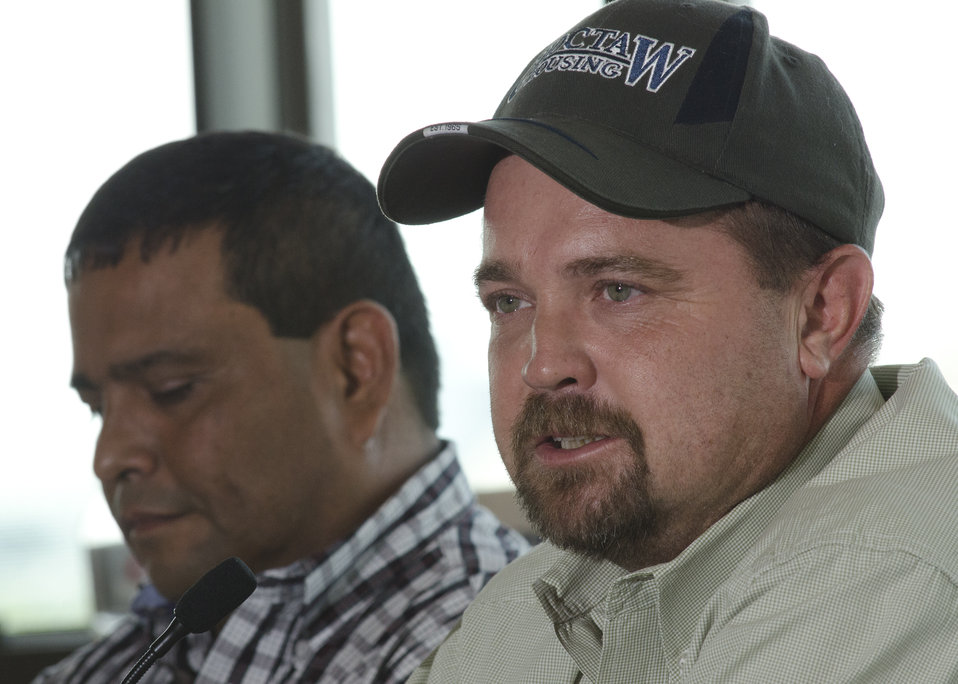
Farmer/Rancher of the Choctaw Nation in Soper, OK., Henry “Porter” Holder, speaking, was elected Vice Chairman of the U.S. Department of Agriculture’s (USDA) Council for Native American Farming and Ranching (CNAFR) held at the National Museum of the American Indian in Washington, D.C., on Wednesday, Aug. 15, 2012. CNAFR was created to advise the Secretary on ways to eliminate barriers to participation for Native American Farmers and Ranchers in USDA programs. The Council was established as part of the Keepseagle settlement, and is conducted under the oversight of USDA's Office of Tribal Relations under the Office of the Secretary of Agriculture.